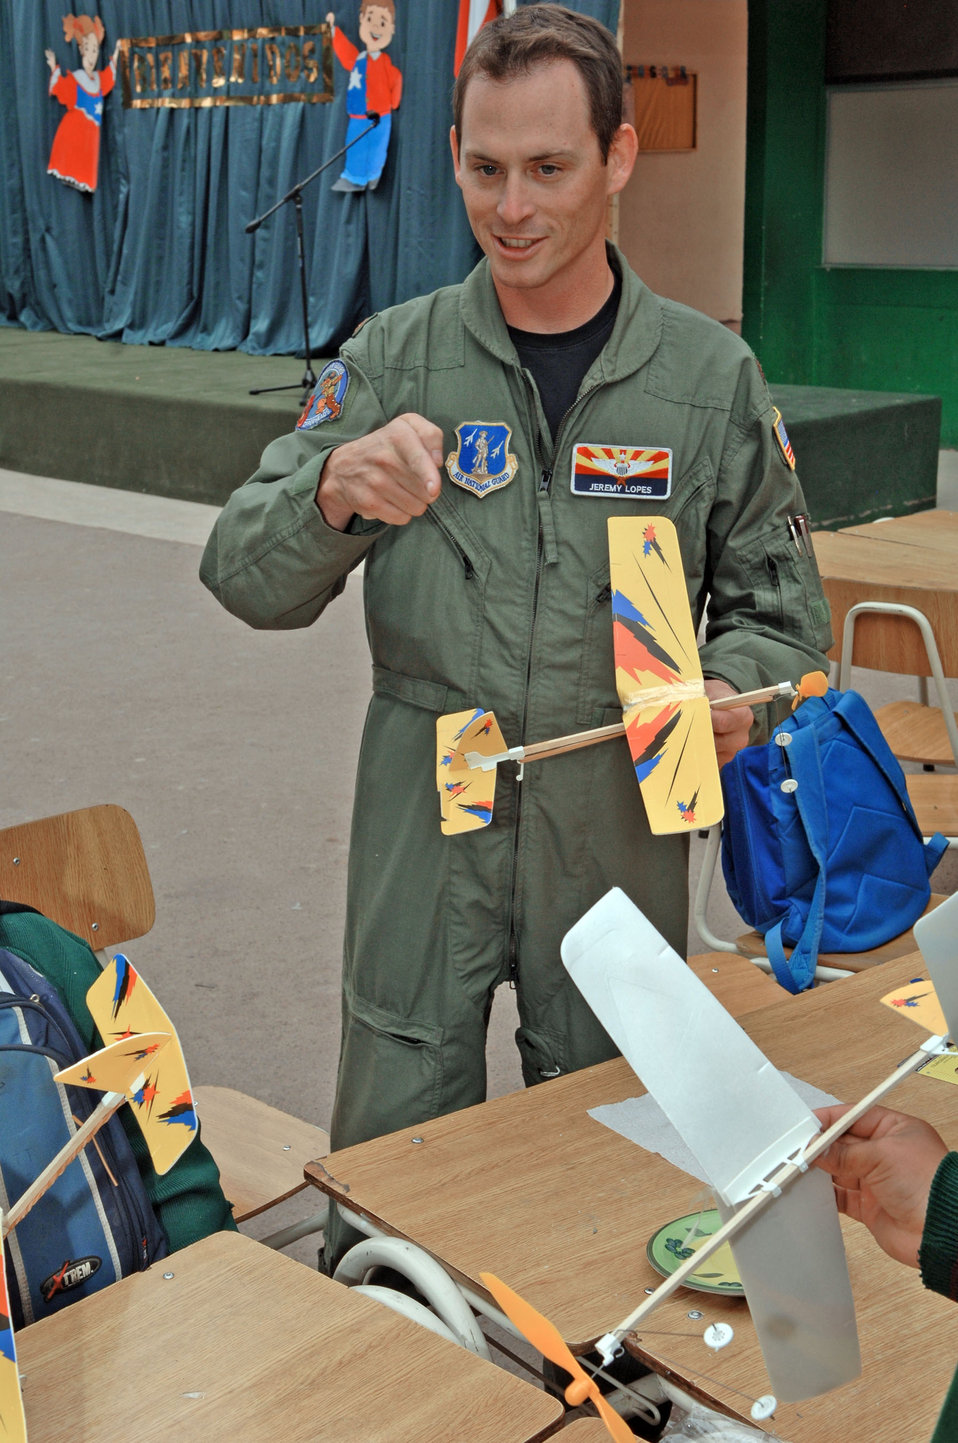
U.S., Chilean airmen visit school

Maj. Jeremy Lopes helps students of Colegio Macaya construct model airplaces during a joint U.S./Chilean air force visit to the school Oct. 27, 2009, in Alto Hospicia, Chile. Major Lopes is a 161st Air Refueling Wing pilot.